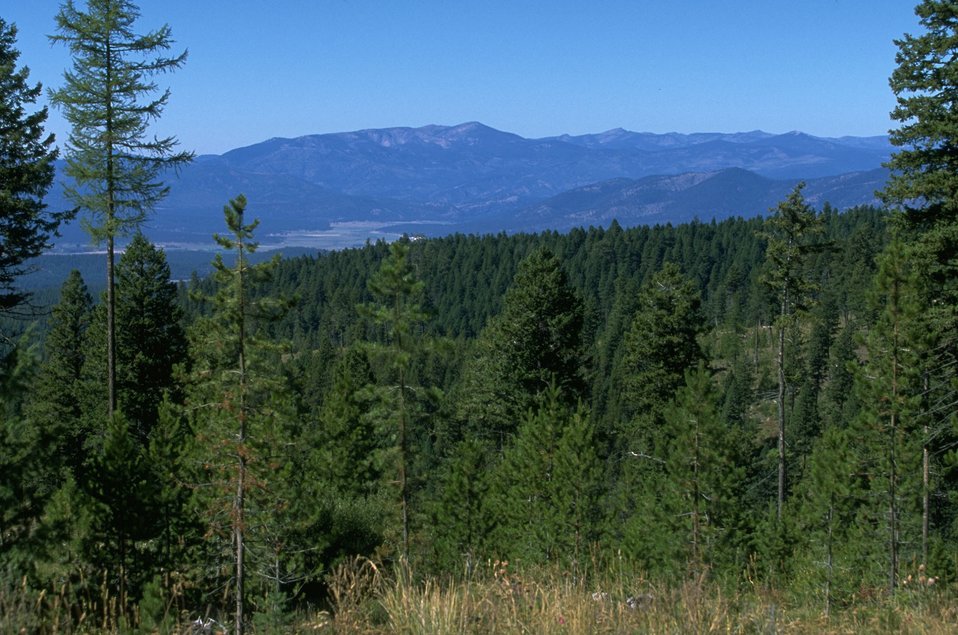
View from Garnet Back Country Byway